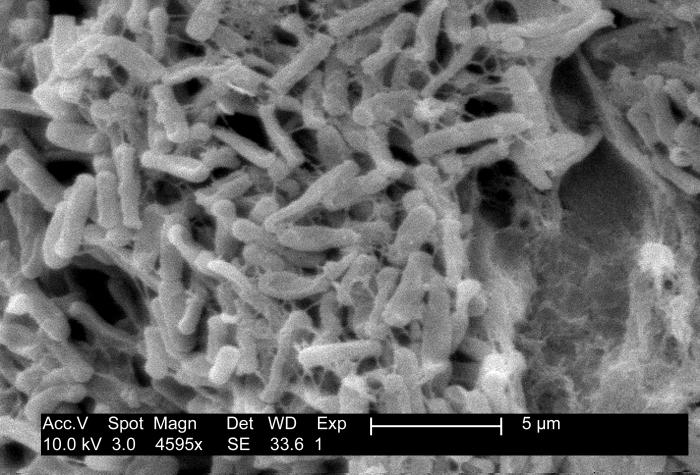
This micrograph depicts Gram-positive C. difficile bacteria from a stool sample culture obtained using a .1�m filter.